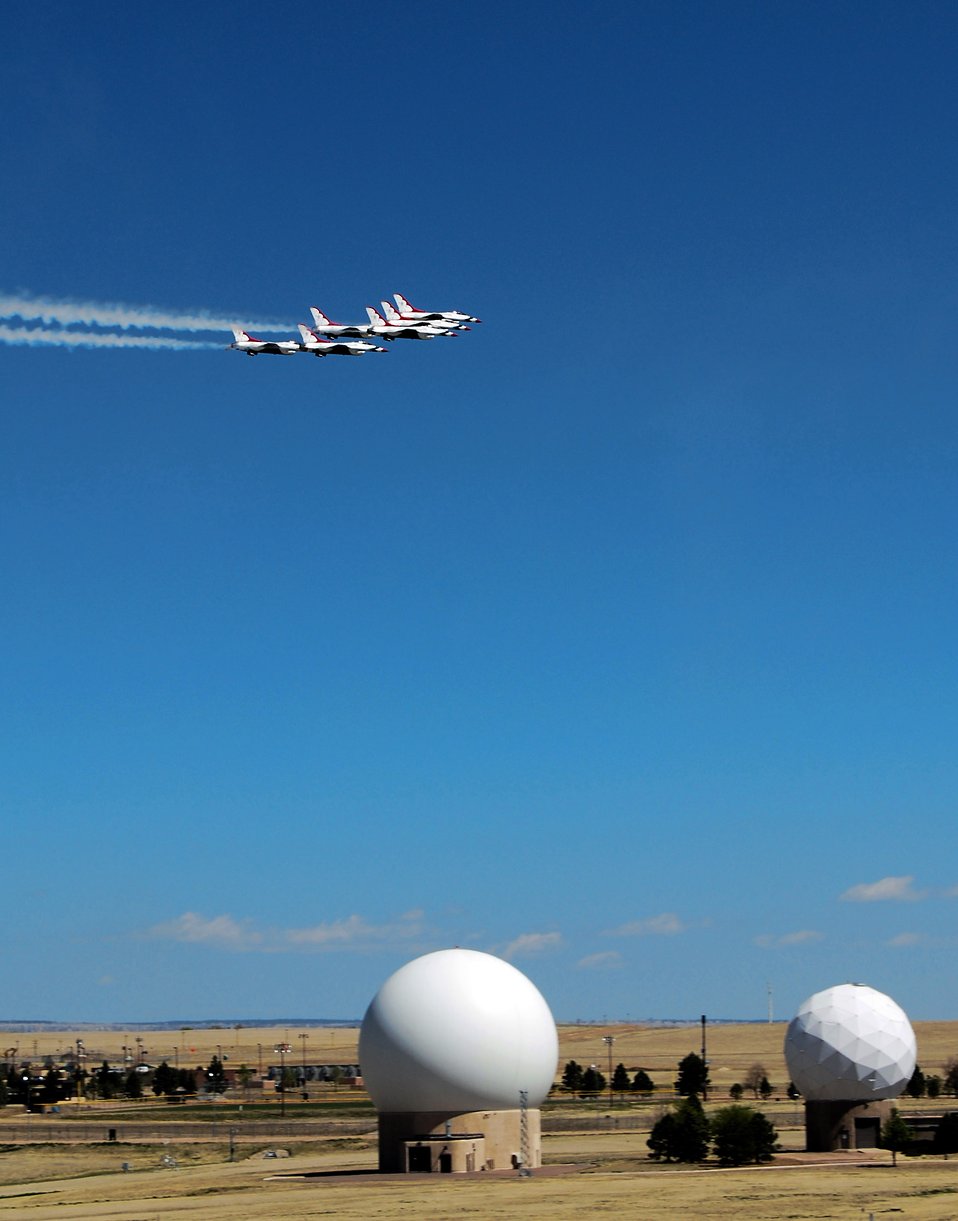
Airpower meets space power

Airpower met space power at Schriever Air Force Base, Colo., as the U.S. Air Force Thunderbirds flew over the base May 25. The Thunderbirds were in nearby Colorado Springs to perform at the Air Force Academy graduation May 28.